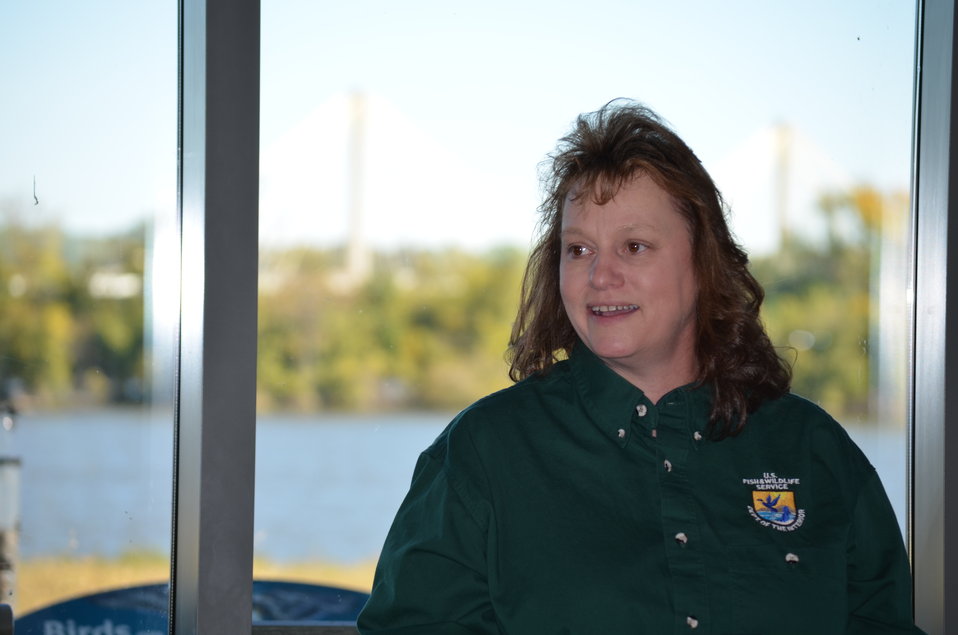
Welcome to the Show-Me state

USFWS State Private Lands Coordinator Kelly Srigley-Werner welcomes partnership members to the Audubon Center at Riverlands in West Alton, MO. A flagship project of the National Audubon Society and Audubon Missouri, the new Audbon Center offers world class birding, education, and outdoor opportunities along one of the most significant migratory flyways in the world - the Mississippi River. USFWS/Ashley Spratt